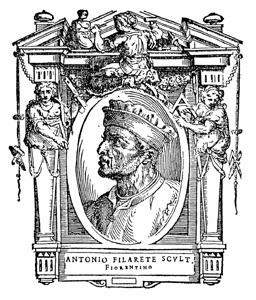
Illustratio from 'Le Vite' by Giorgio Vasari, edition of 1568. For the artist portrayed see filename